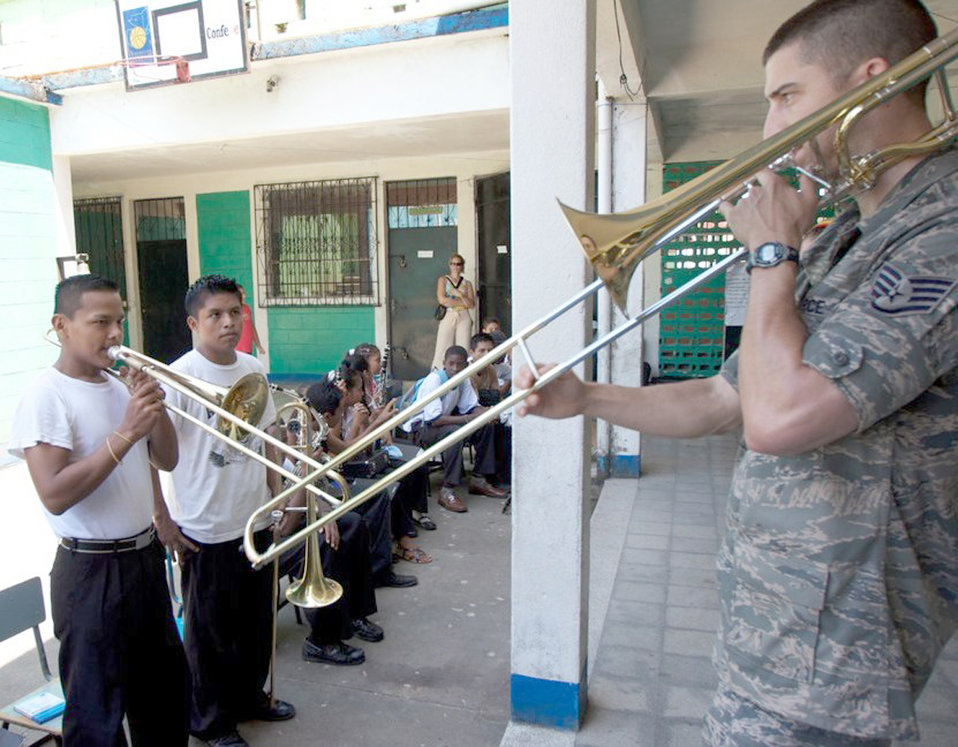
Band of Flight

Staff Sgt. Doug Kost leads a student during a workshop Sept. 27, 2010, in Livingston, Guatemala. The United States Air Force Band of Flight's deployed ensemble, New Harmony, recently played for more than 5,000 people in Guatemala as part of a United States Southern Command humanitarian mission in support of the Navy's Operation Continuing Promise. Sergeant Kost is a New Harmony ensemble member.